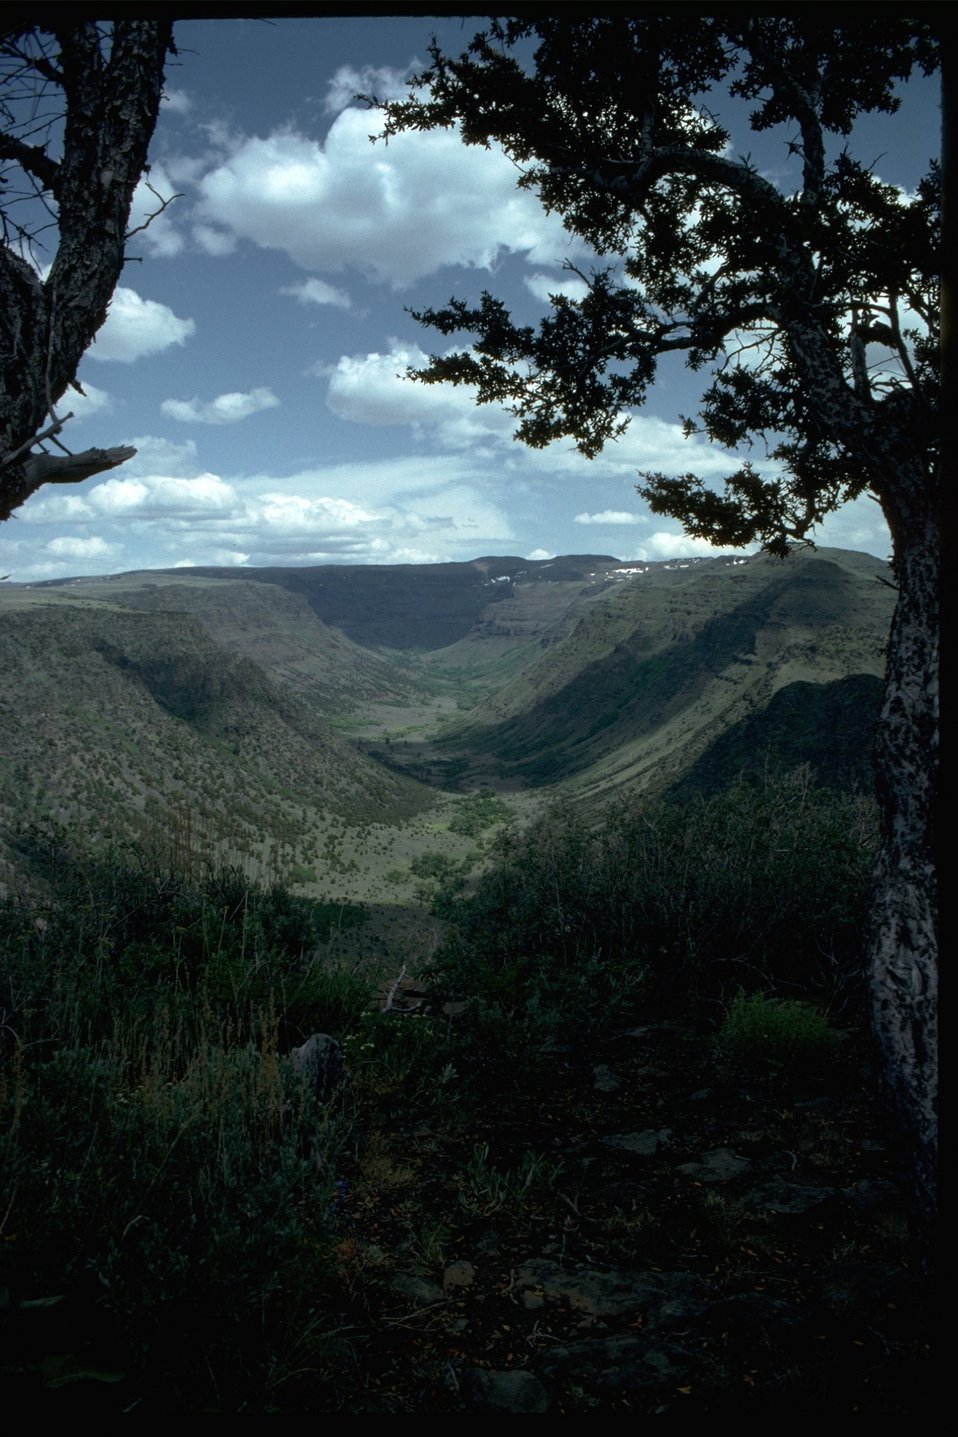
View up Big Indian Gorge from the Big Indian Overlook in the Steens.